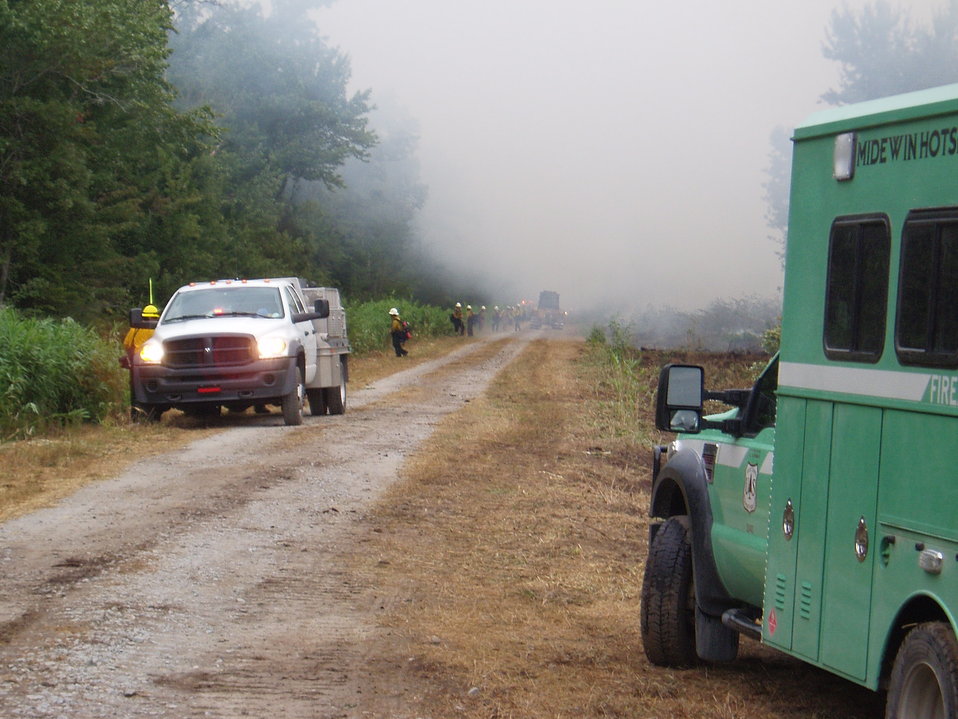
Midewin Hotshots

Suffolk, VA, August 2011: The Midewin Hotshot firefighters work at the Lateral West Fire on Great Dismal Swamp National Wildlife Refuge.